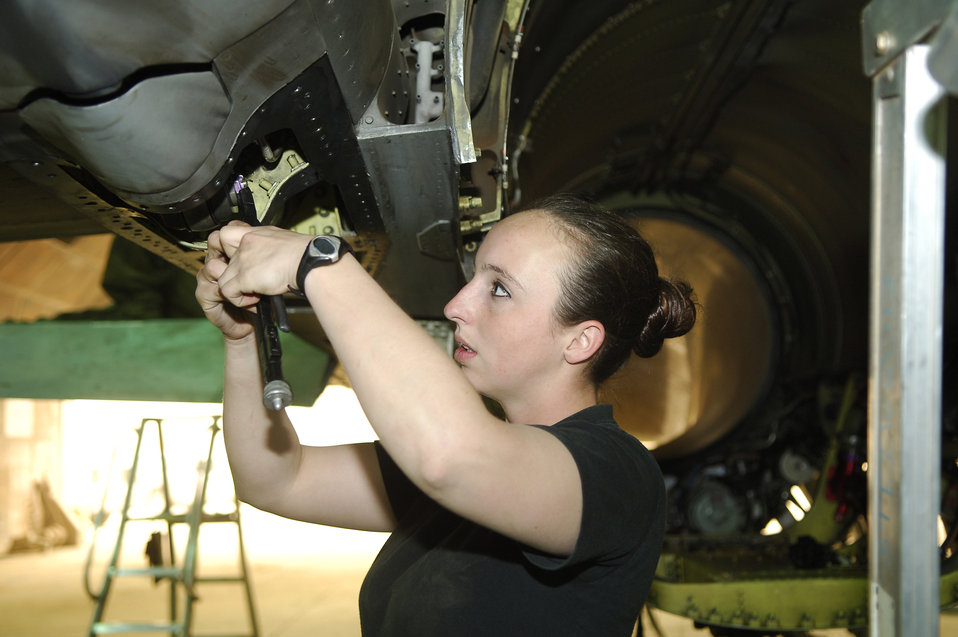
Aircraft maintainers contribute to GWOT milestone

Airman Crystal Carper tightens a screw in one of the panels of an F-16 Fighting Falcon at Balad Air Base, Iraq, April 19. The Air Force reached its 1 millionth sortie mark earlier this week, thanks in part to aircraft maintainers like Airman Carper who have helped generate nearly 5,000 sorties in the area of responsibility this year alone. Airman Carper is a 332nd Aircraft Maintenance Squadron F-16 Fighting Falcon crew chief.